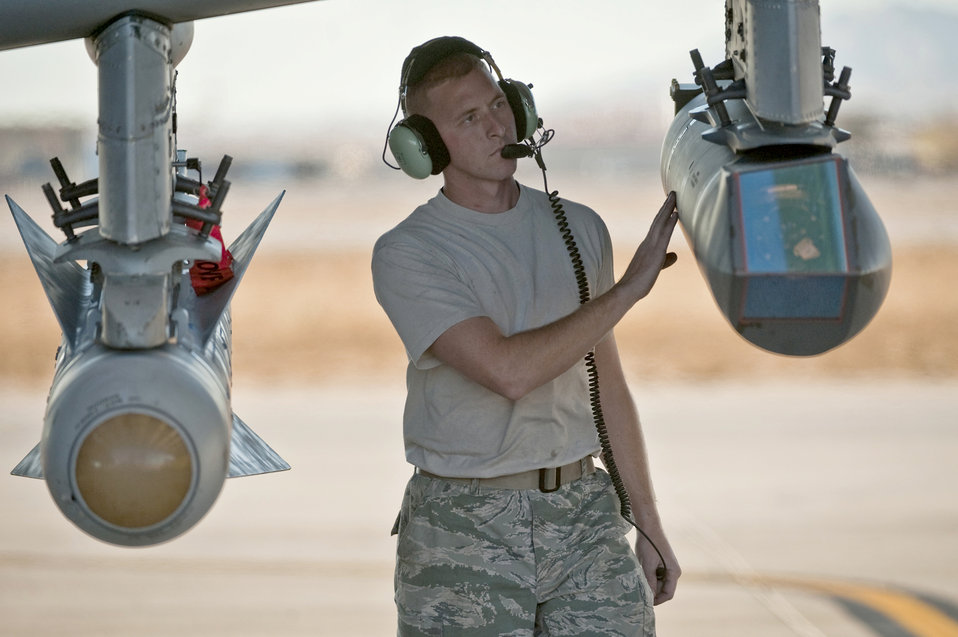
Lethal inspection

Staff Sgt. Jamie Case looks over a targeting pod attached to an A-10 Thunderbolt II during the Green Flag West 11-2 exercise Dec. 6, 2010, at Nellis Air Force Base, Nev. Sergeant Case is with the 23rd Aircraft Maintenance Squadron at Moody AFB, Ga.